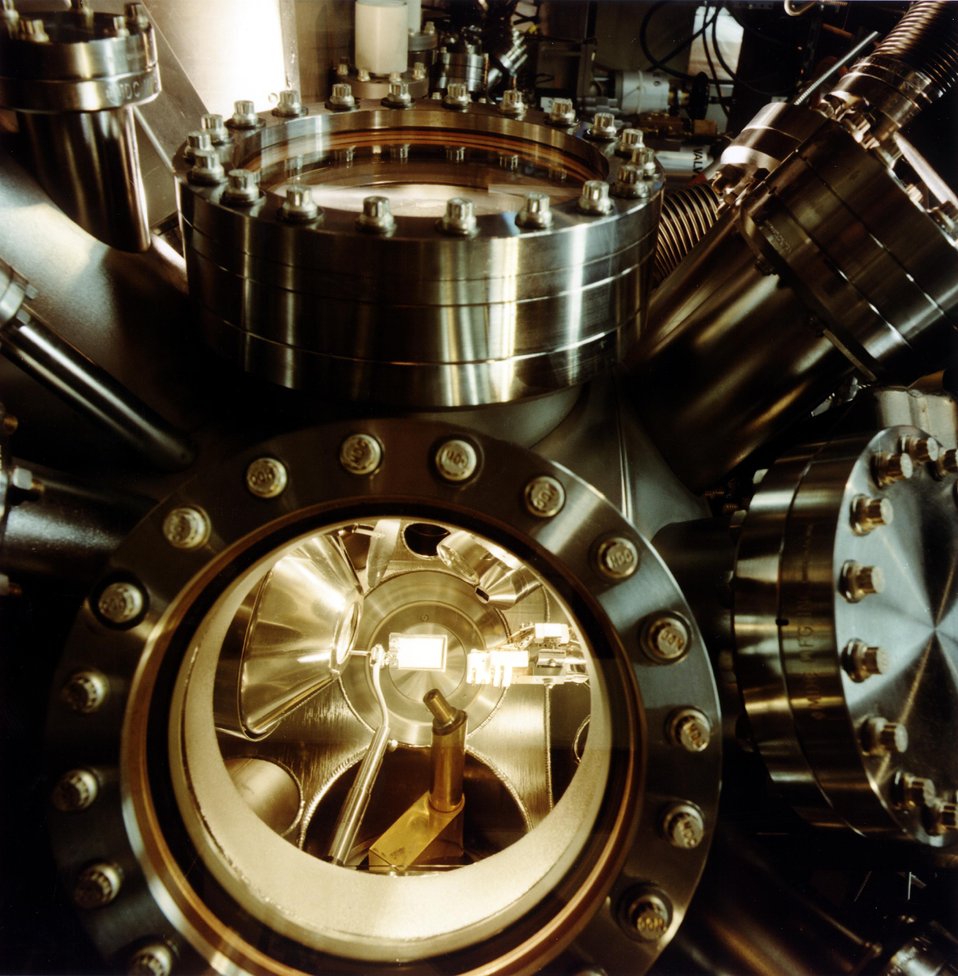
CHAMBER AT NSLS FOR SURFACE STUDY OF MATERIALS.

AT&T BELL LABORATORIES BUILT THIS UNIQUE CHAMBER AT THE NATIONAL SYNCHROTORN LIGHT SOURCE, FOR SURFACE STUDIES OF MATERIALS. MORE THAN 70 CORPORATIONS CONDUCT RESEARCH AT NSLS. AT&T BELL LABS CONDUCTS METAL AND SEMICONDUCTOR RESEARCH, LITHOGRAPHY, STRUCTURAL & ELECTRICAL PROPERTIES. IBM, ONE OF THE CORPORATIONS EMPLOYING BNL FACILITIES, USED THE NSLS TO DEVELOP X-RAY LITHOGRAPHY.